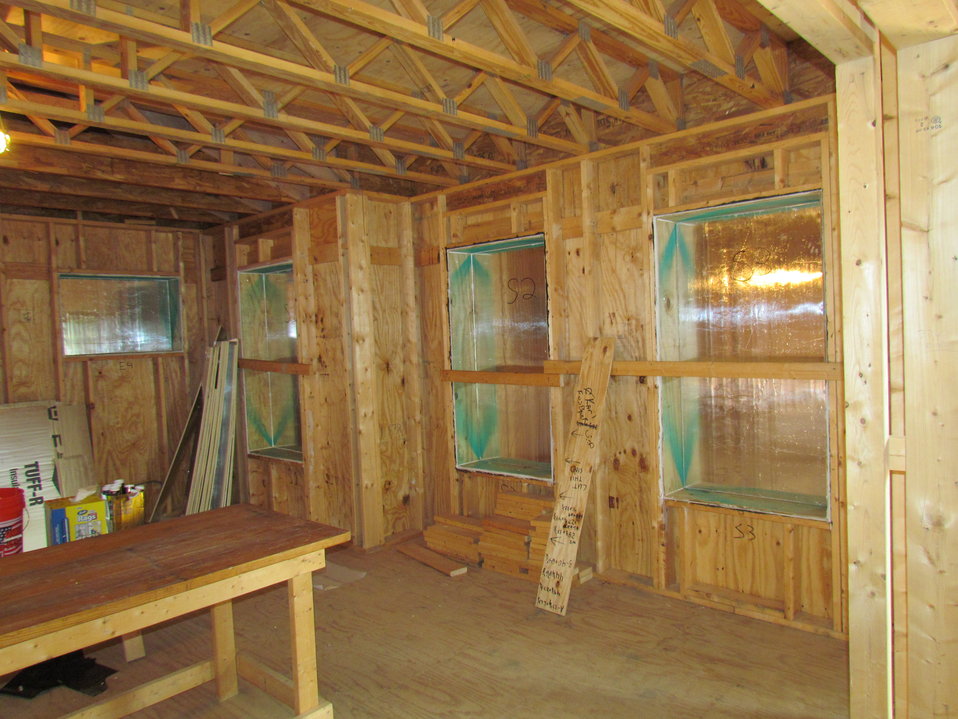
Net-Zero Energy Residential Test Facility - Interior photo of facility. First floor facing front of facility.